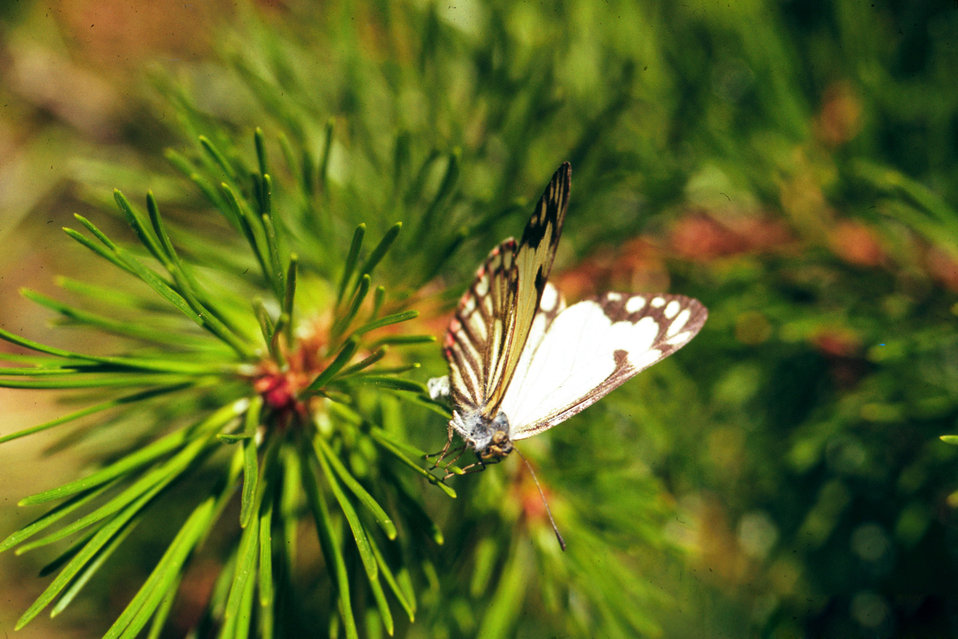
A monarch butterfly collects nectar from a flower. Butterflies are one of nature’s many pollinators for flowers and crops and are crucial in production for fruits and vegetables.